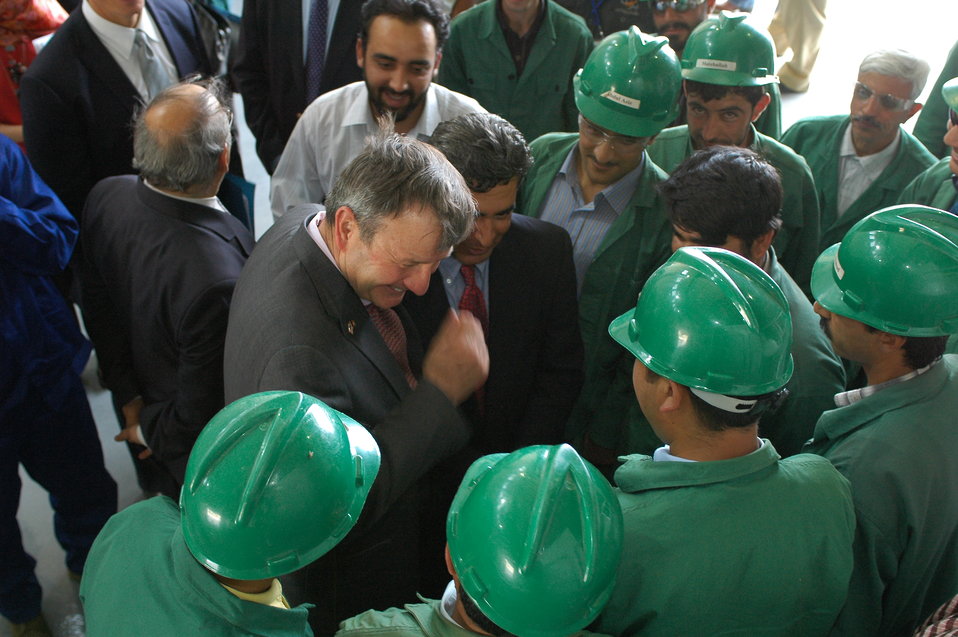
105 MW Tarakhil Power Plant Handover